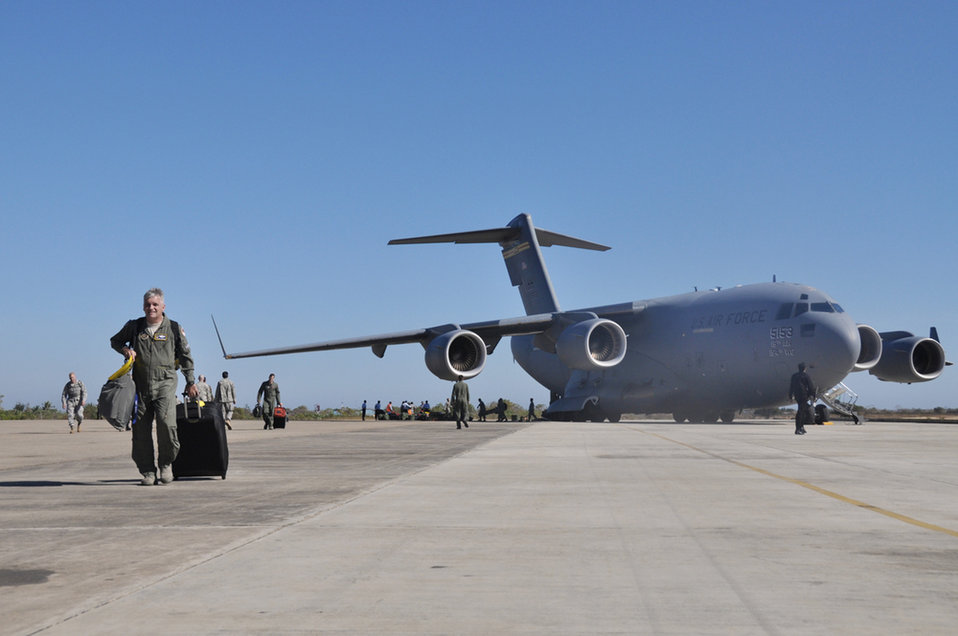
Hawaii Guard members give Pacific Angel a lift

Airmen from various bases across the total force community unload their equipment and supplies from a C-17 Globemaster III after landing July 15 to support Operation Pacific Angel 2009 in Kupang, Indonesia. An aircrew from the Hawaii Air National Guard's 204th Airlift Squadron at Hickam Air Force Base, Hawaii, delivered the people and equipment for the operation.